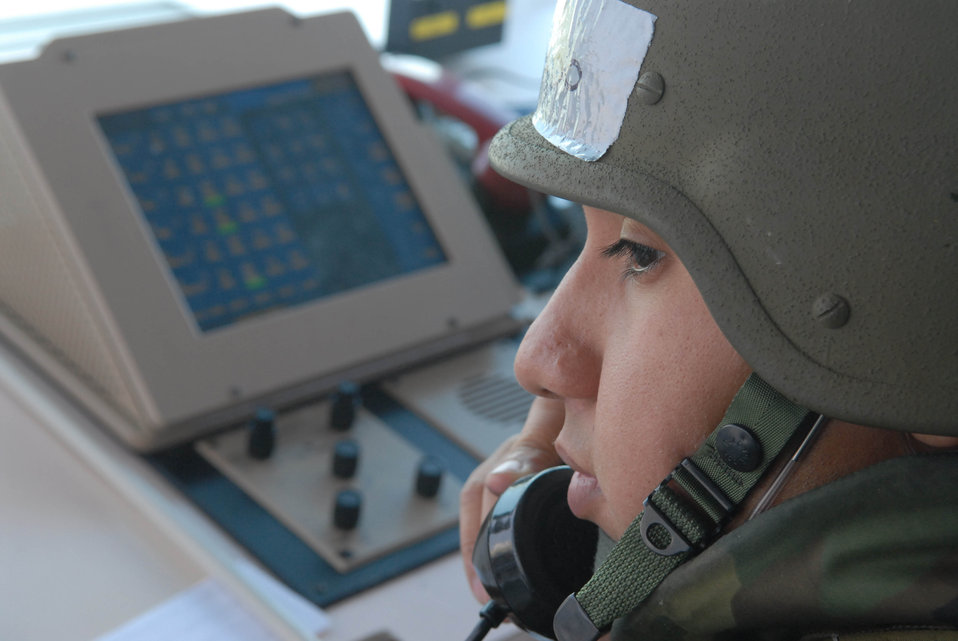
Testing the tower

Staff Sgt. Oscar Alvarado makes a call on the crash phone in the air traffic control tower during an exercise Oct. 17 at Kadena Air Base, Japan. The crash phone is used to rapidly notify all base emergency services in the event of an aircraft mishap. The 18th Wing exercise from Oct. 13 to 19 tests the wing's ability to respond to a wartime situation. Sergeant Alvardo is assigned to the 18th Operations Squadron.